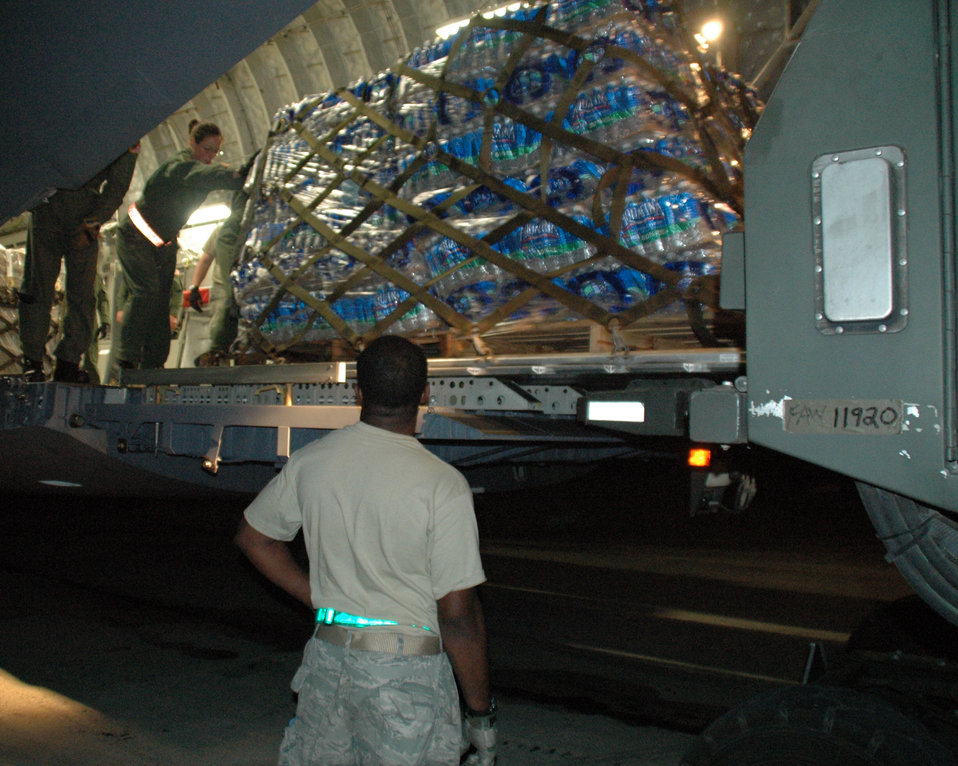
Reaching out with aid

Pallets of water, food and other humanitarian relief supplies are offloaded from a C-17 Globemaster III Jan. 16, 2010, in Port-au-Prince, Haiti. Supplies are being flown into the earthquake ravaged country around the clock by Air Force aircrews.